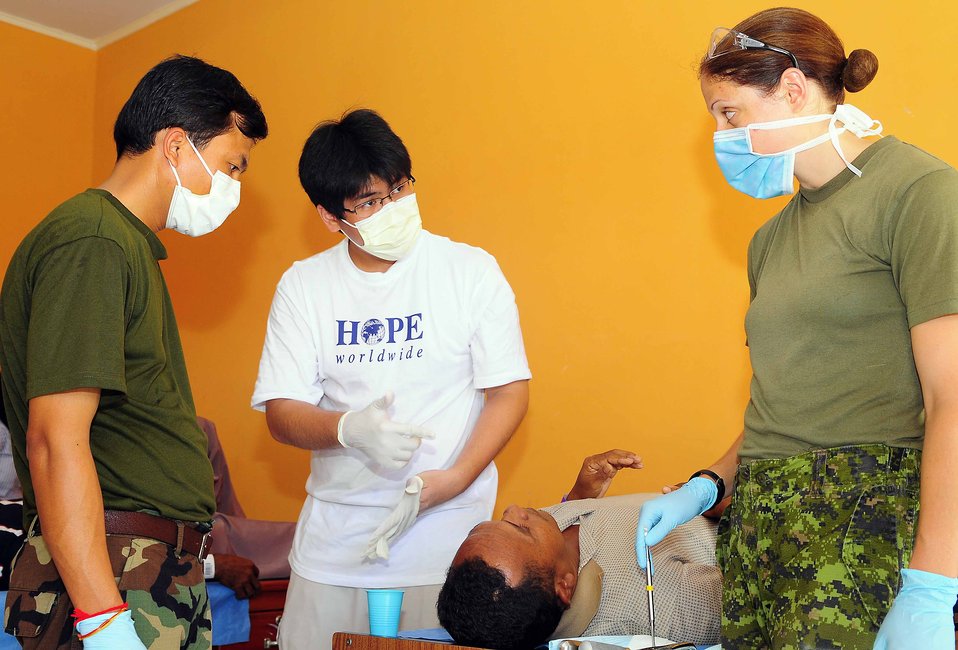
PP 2010 Medical Professionals Treat a Patient

Pacific Partnership 2010 medical professionals work together to treat a patient during a medical civic action program in Ternate, Indonesia, on July 23, 2010. Pacific Partnership 2010 is the fifth in a series of annual U.S. Pacific Fleet endeavors conducted in Indonesia as a disaster relief exercise aimed at strengthening regional partnerships.